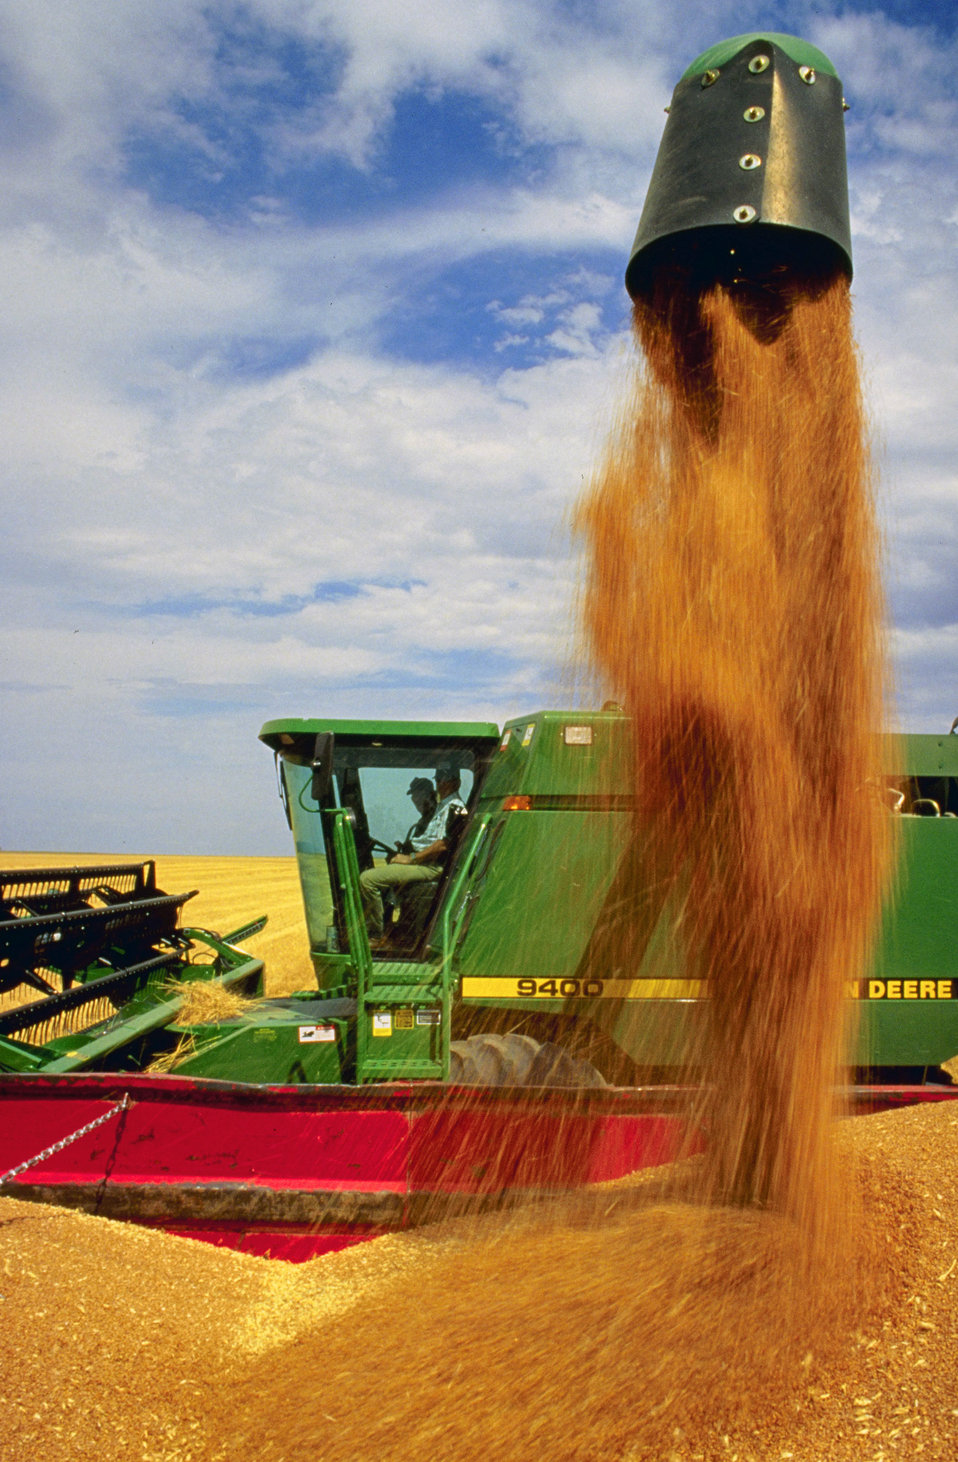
Wheat is harvested at the U.S. Department of Agriculture’s (USDA) Agriculture Research Service(ARS) Central Great Plains Research Station in Akron, CO.